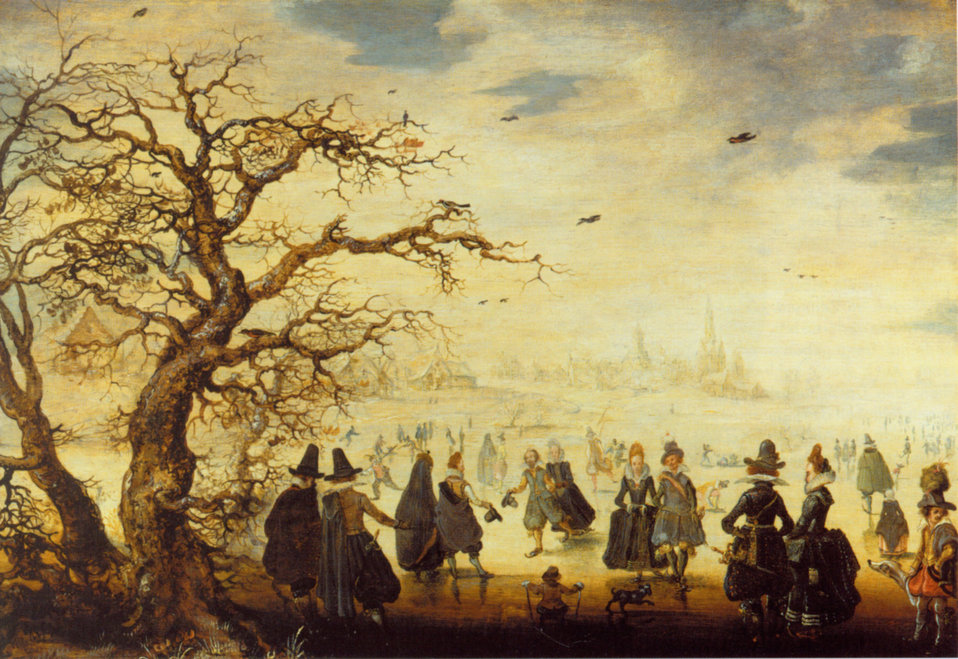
Adam-van-breen wintervergnuegen